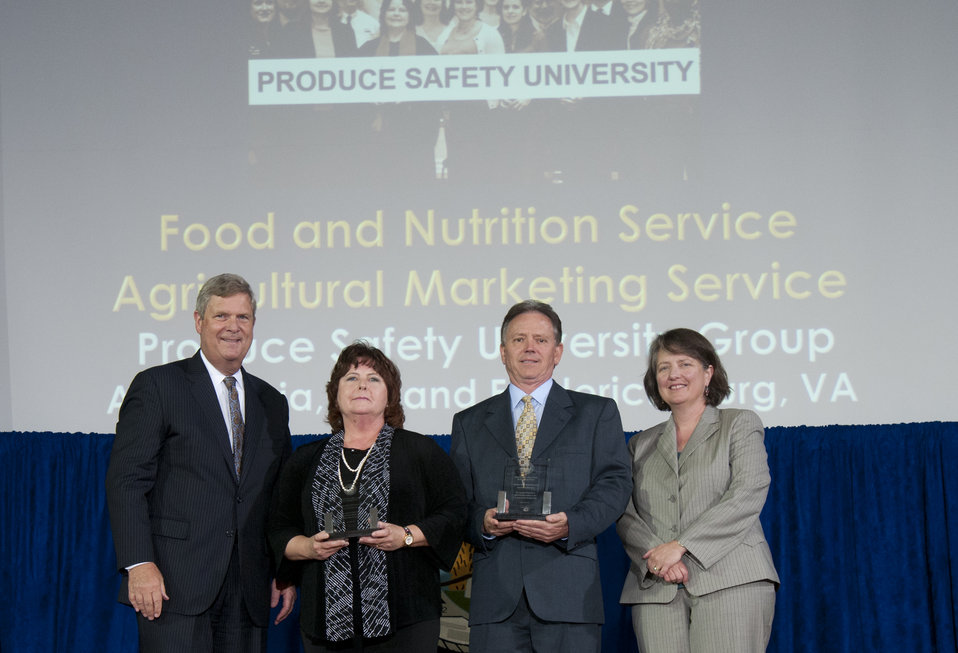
Agriculture Secretary Tom Vilsack and Agriculture Deputy Secretary Kathleen Merrigan present the Secretary’s Honor Award to Produce Safety University Team Food and Nutrition Service (FNS) group leaders Brenda Halbrook and Carl L. Newell at the U.S. Department of Agriculture (USDA) 64th Annual Honor Awards Ceremony in Washington, D.C. on Wednesday, Sept. 12, 2012. The Produce Safety University Group managed the Produce Safety University, which widely disseminates training for school nutrition professionals on handling fresh produce safely, resulting in increased access to fresh fruits and vegetables for children.